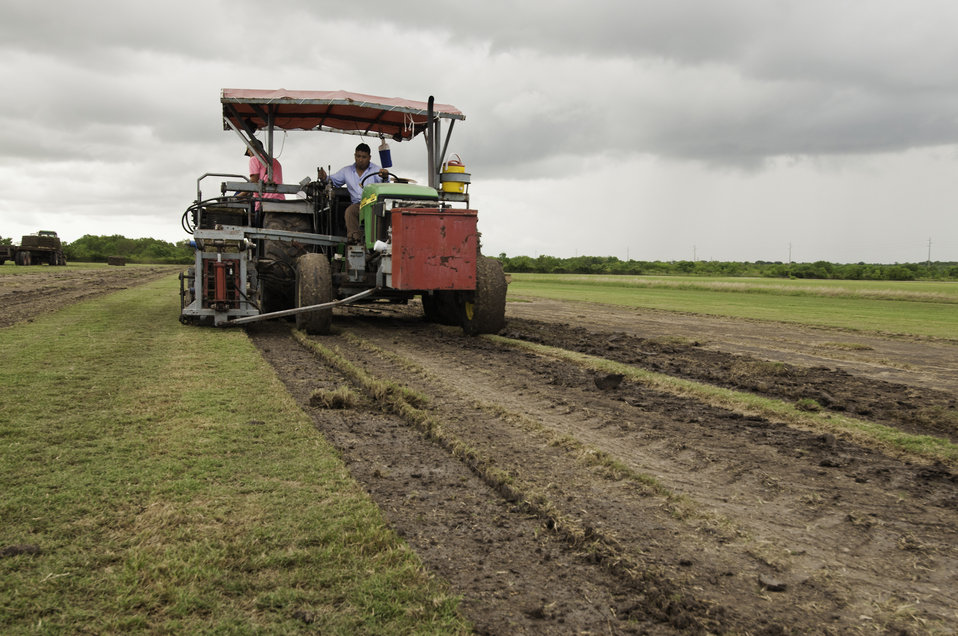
Sod used in landscaping is harvested on the Quality Turf Farms in Guy, TX on Aug. 23, 2013.